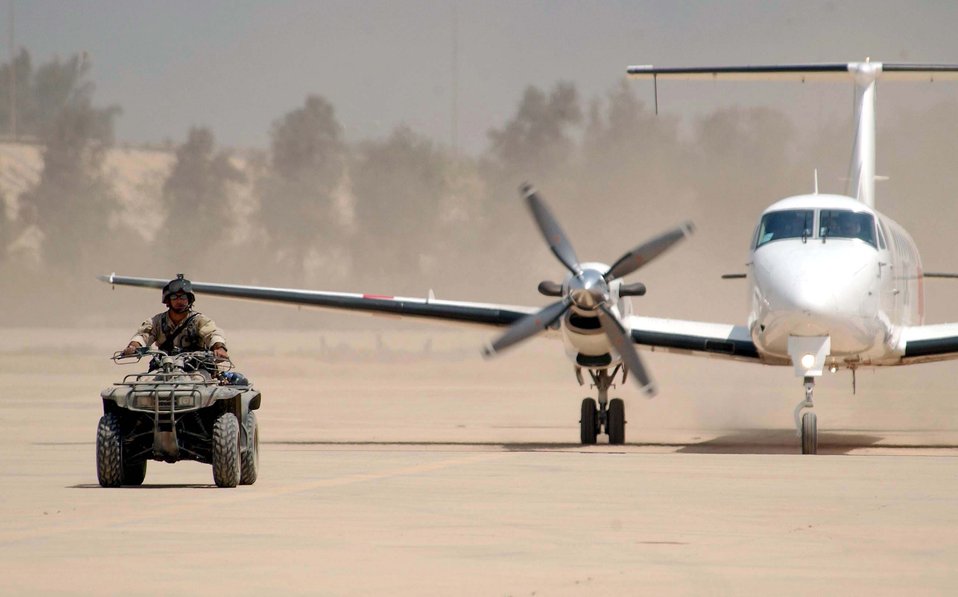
Combat controllers key in war on terror

BAGHDAD INTERNATIONAL AIRPORT, Iraq -- A combat controller escorts the first civilian aircraft to land on the commercial runway here April 24, 2003.